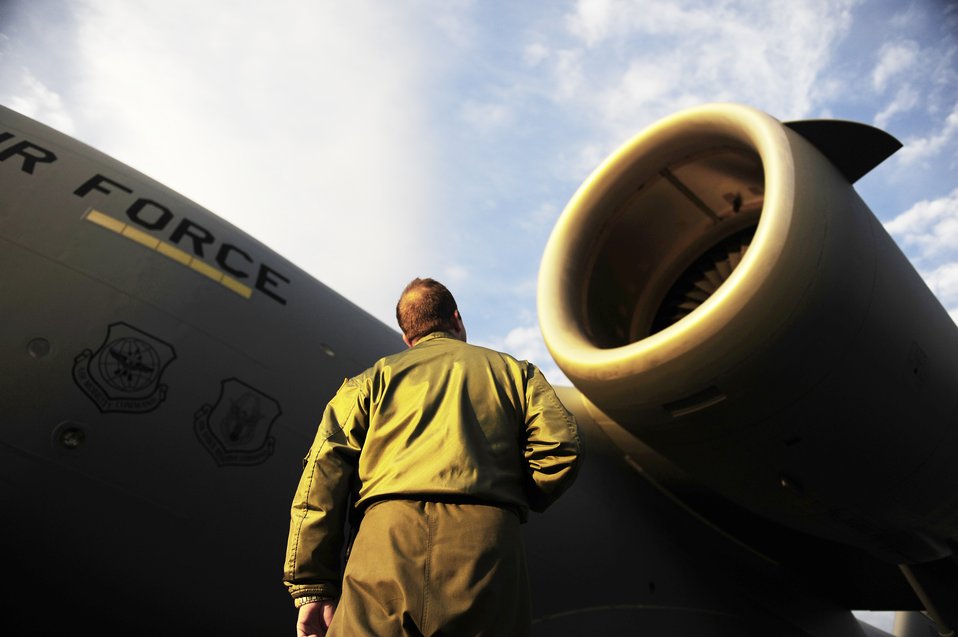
Haiti Relief Operations

Maj. Mark Smith conducts a pre-flight walk around inspection Jan.14, 2010, at Charleston Air Force Base, S.C, prior to participating in a relief effort to Haiti. Major Smith is a a reservist with the 317th Airlift Squadron, 437th Air Mobility Wing.